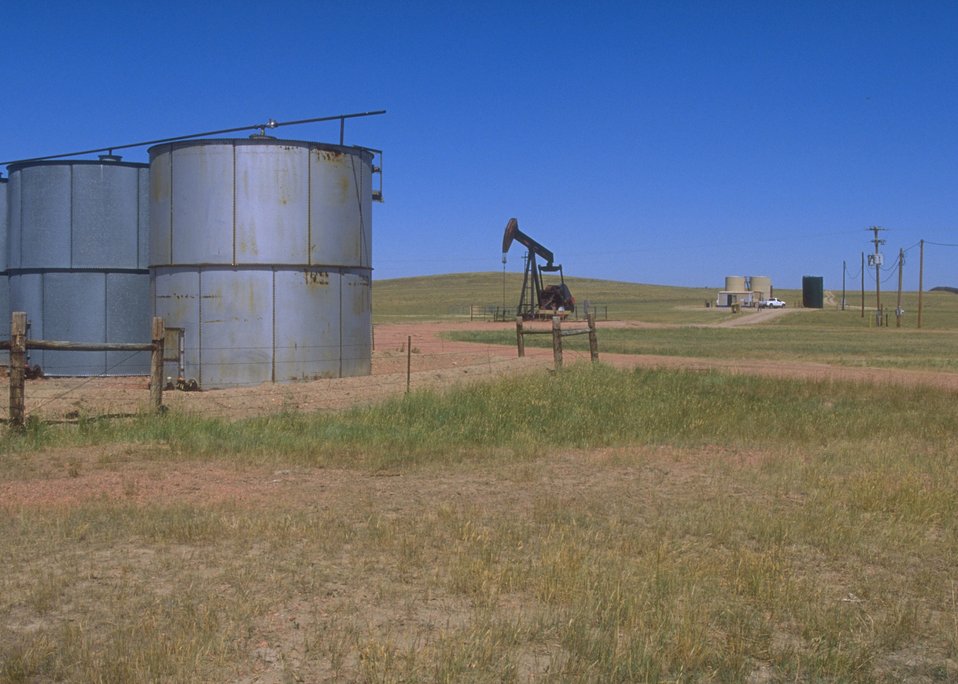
Oil well and associated facilities, Buffalo Field Office.